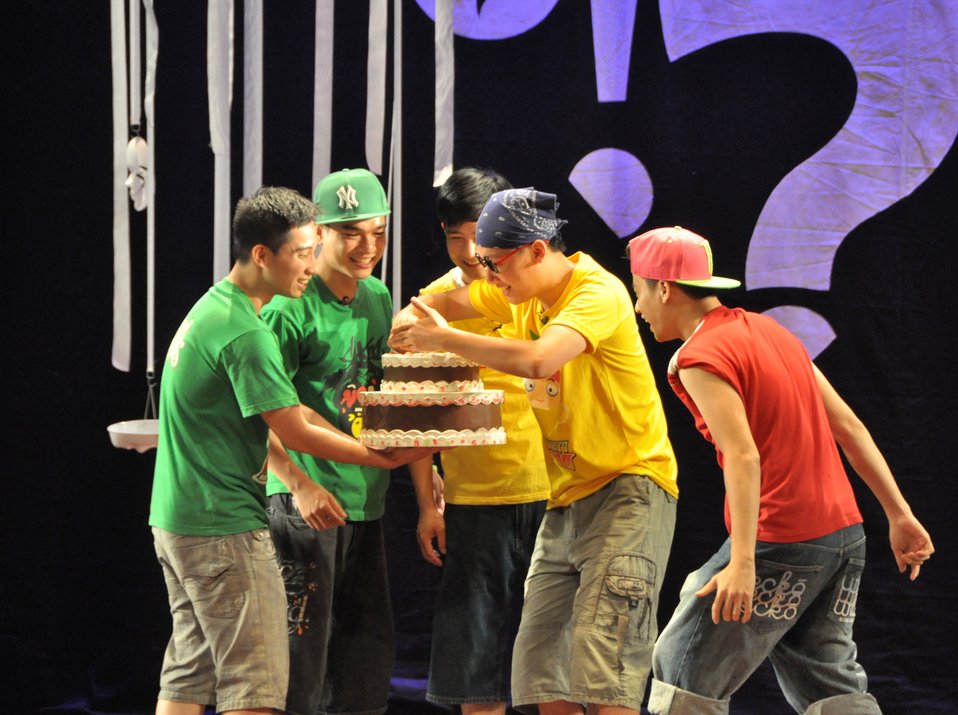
PEPFAR Musical Questions and Exclamations

Hanoi, May 17, 2013